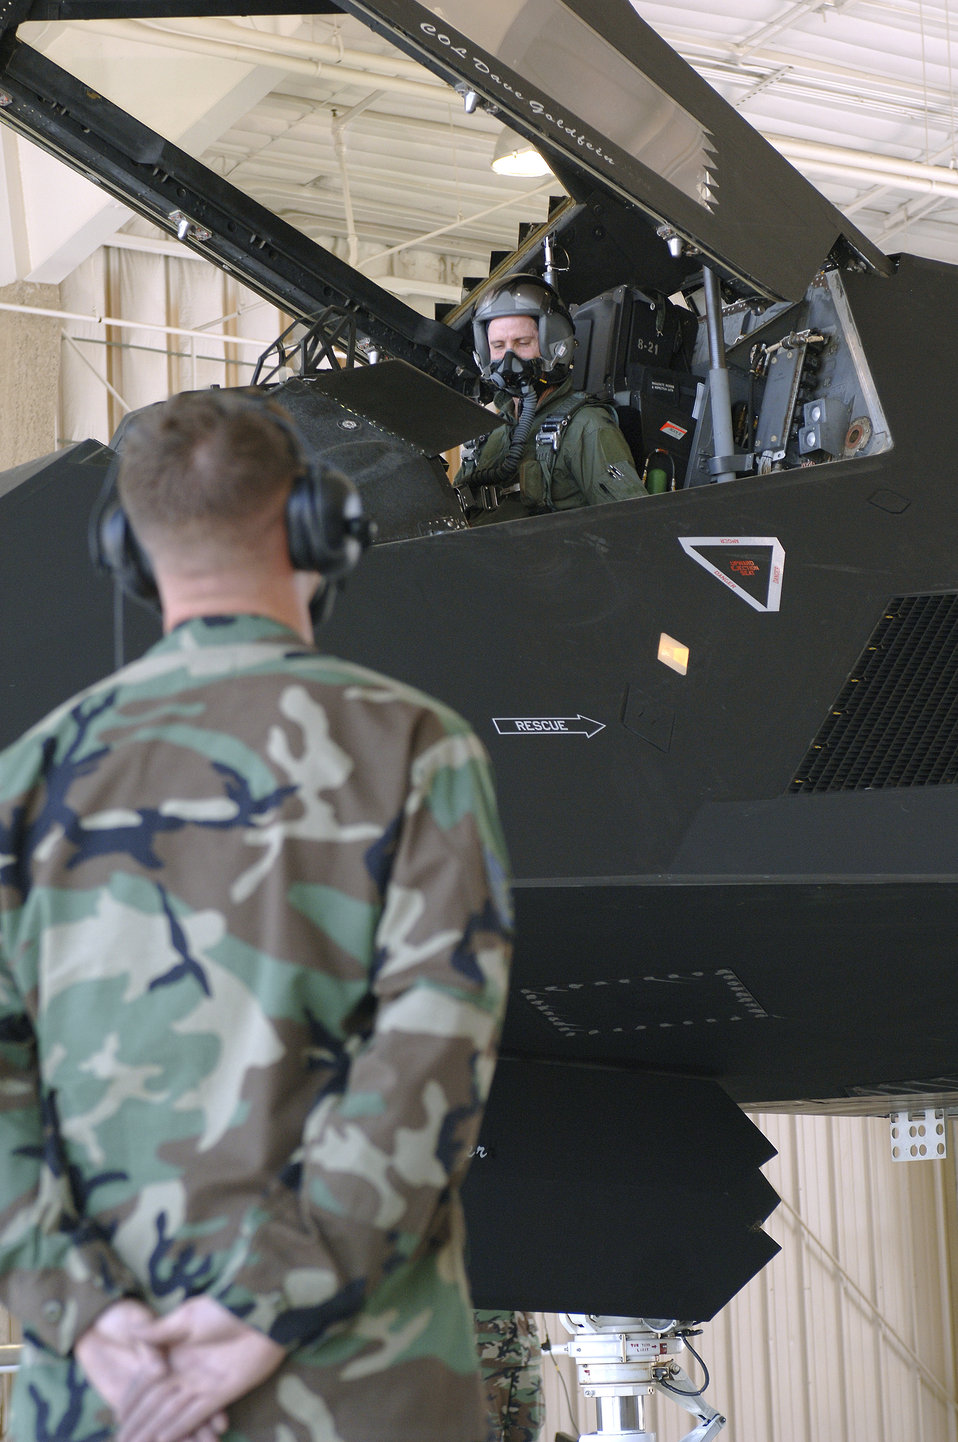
Flight commemorates 250,000 hours for Nighthawks

Col. John Forsythe makes final checks with Staff Sgt. Kasey Lynch before departing on a special flight July 25th at Holloman Air Force Base New Mexico. The flight was commemorating 250,000 hours of operation by F-117 Nighthawks. Colonel Forsythe is the 49th Operations Group commander. Sergeant Lynch is a crew chief assigned to the 49th Fighter Wing.